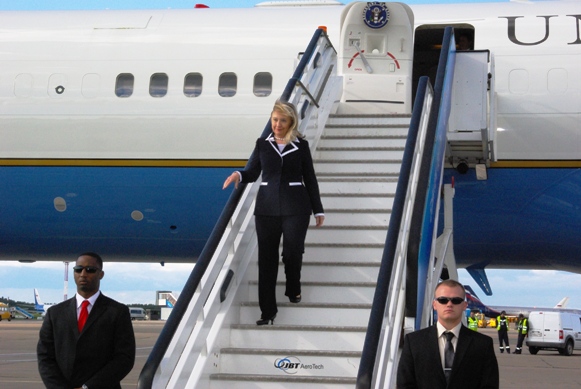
Secretary Clinton Arrives in St. Petersburg

U.S. Secretary of State Hillary Rodham Clinton arrives in St. Petersburg, Russia, on June 28, 2012.